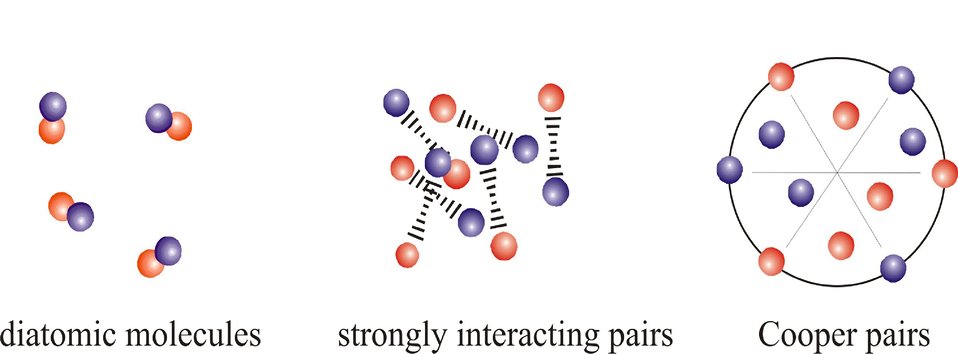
Ultracold Atomic Gases

A powerful new JILA technique reveals hidden properties of ultracold atoms in a superfluid, in which atoms form pairs like electrons in a superconductor. The JILA group focuses on the 'crossover' stage (middle graphic) between the small pairs of a Bose-Einstein Condensate (left) and the extremely large pairs of a low-temperature superconductor (right).